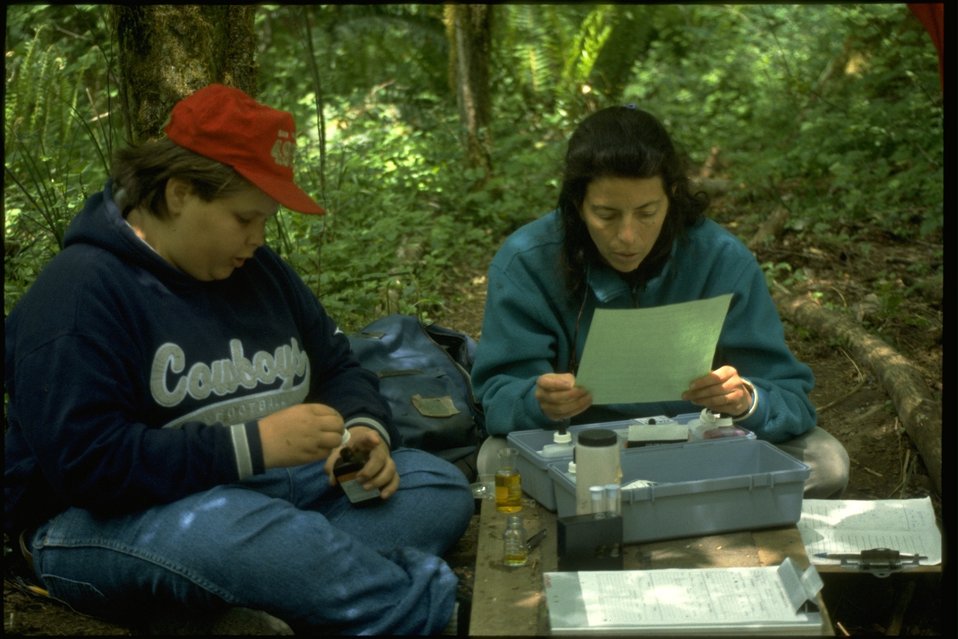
Cascade Stream Watch at Wildwood Recreation Site.